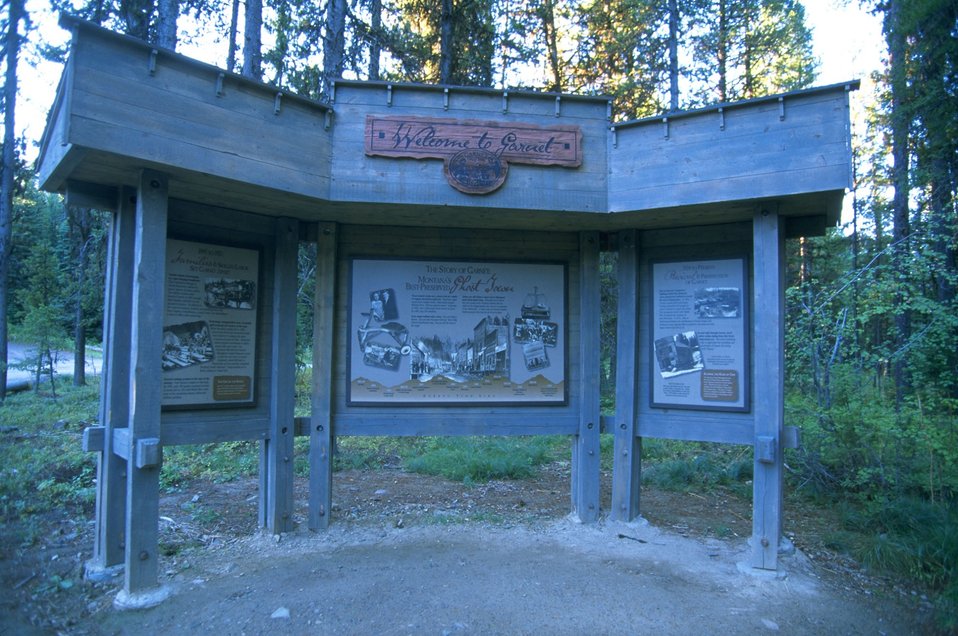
Garnet Ghost Town parking lot kiosk